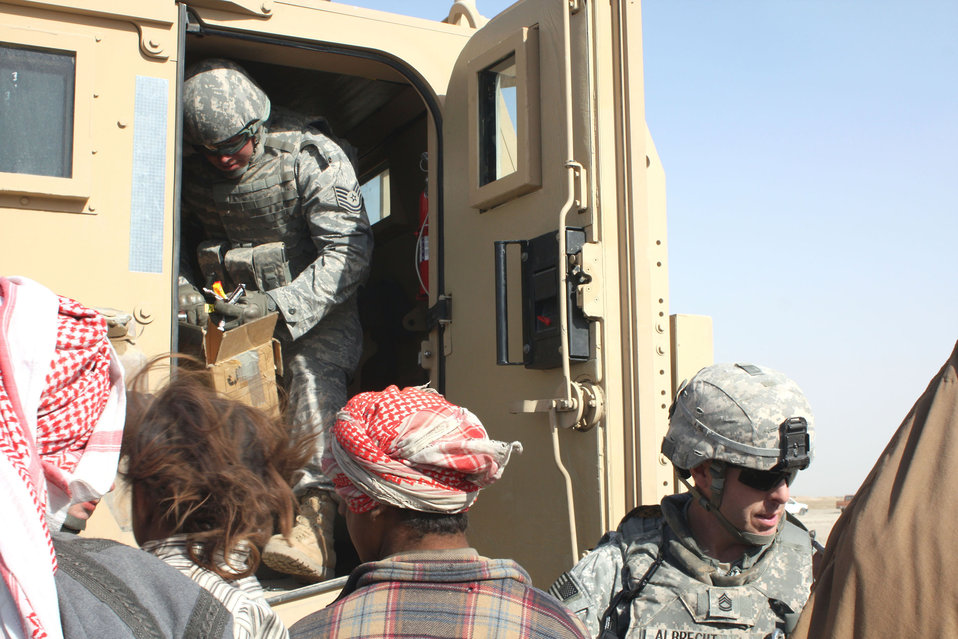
Airman joins Soldiers in aiding camps in Iraq

Tech. Sgt. Joseph Slysz and Army Sgt. 1st Class Kevin Albrecht sit with an Iraqi man at his home Dec. 16, 2008, outside Contingency Operating Base Adder near the city of Nasiriyah, Iraq. Sergeant Slysz is the NCO in charge of criminal intelligence for the 732nd Provost Marshal Office Det. 5. He is deployed from Edwards Air Force Base, Calif. Sergeant Albrecht is assigned to the 4th Special Troops Battalion, 4th Brigade Combat Team, 1st Cavalry Division.